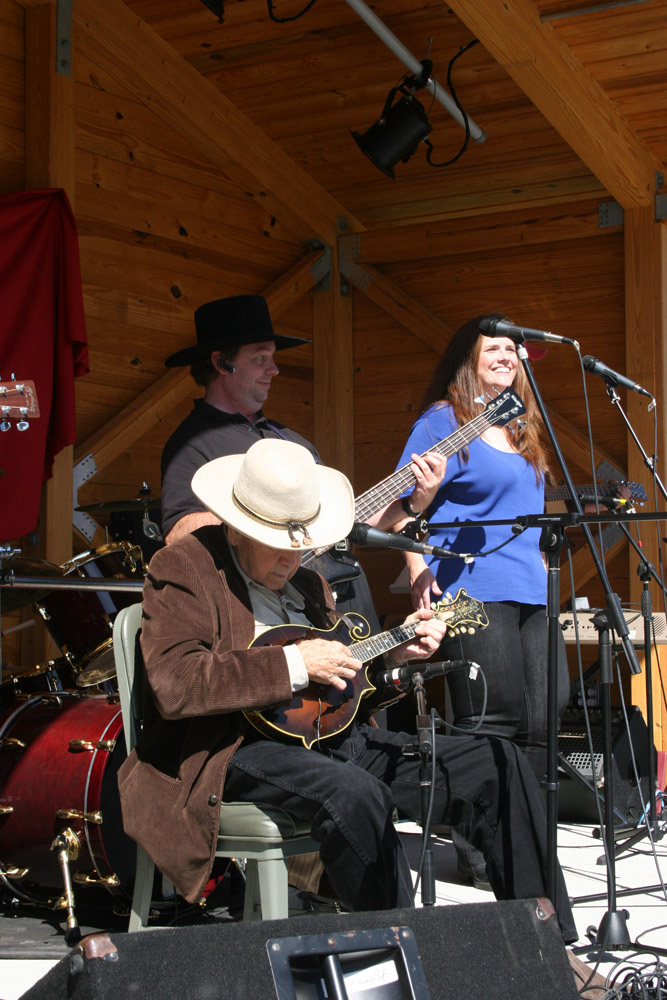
Freshwater Folk Festival

The 5th Annual Freshwater Folk Festival at White Sulphur Springs National Fish Hatchery in West Virginia.Credit: USFWS